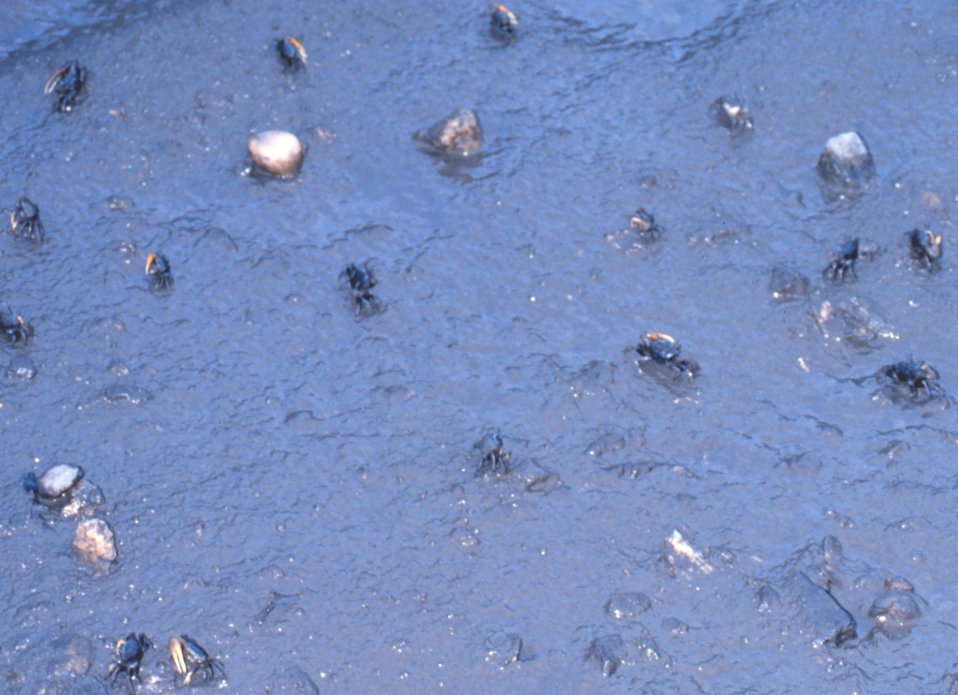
Life on the mudflats at low tide - Helena Island